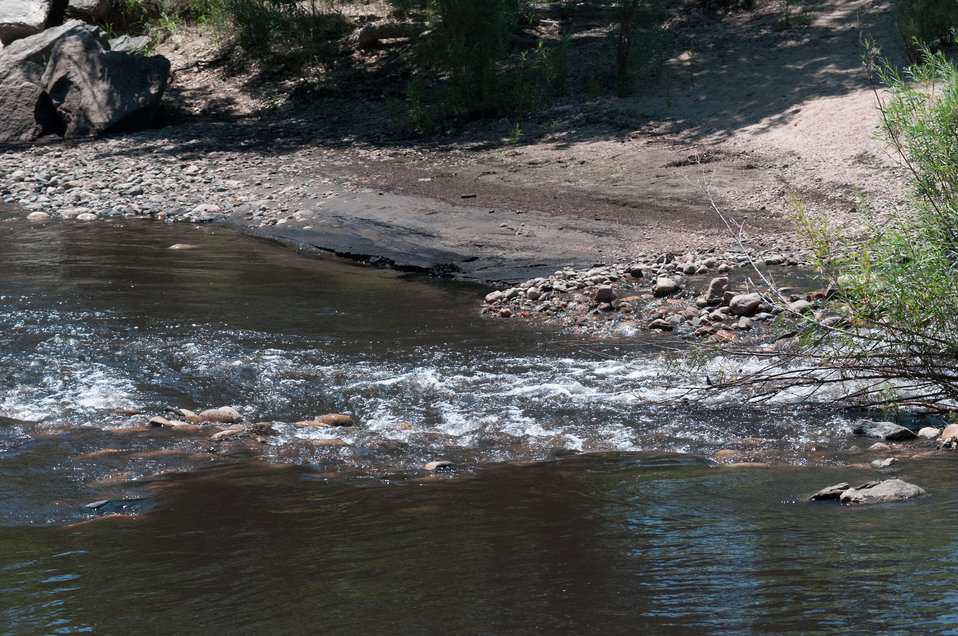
A confluence of two tributaries, the Cache la Poudre and the North Fork of the Cache la Poudre, near Seaman Reservoir, 60 miles north of Denver, Colorado on Friday, July 20, 2012, have been transformed from clear mountain waters to a nearly black water, heavily laden with ash, silt, and burnt debris that was recently washed down mountainsides by thunderstorms. The mountainsides were burned by the Hewlett Gulch Fire (May 14, 2012), in the Poudre Canyon area. At its peak more than 400 firefighters were battling fires pushed by 50 mph winds. When the last embers were cooled, more than 12-square miles lay blacked at a cost of approximately 3.2 million dollars. The aerial distribution of straw has successfully kept nearby Seaman Reservoir clean for the drinking water of the City of Greeley. Forest Service lands receive straw, while private and other lands receive a seed mix and straw to promote ground cover plant growth on ash-covered lands. In total, 1,800 tons of straw will be applied during the 14-day operation. One quarter of the cost was paid by the City of Greeley and the U.S. Department of Agriculture funded the remainder.